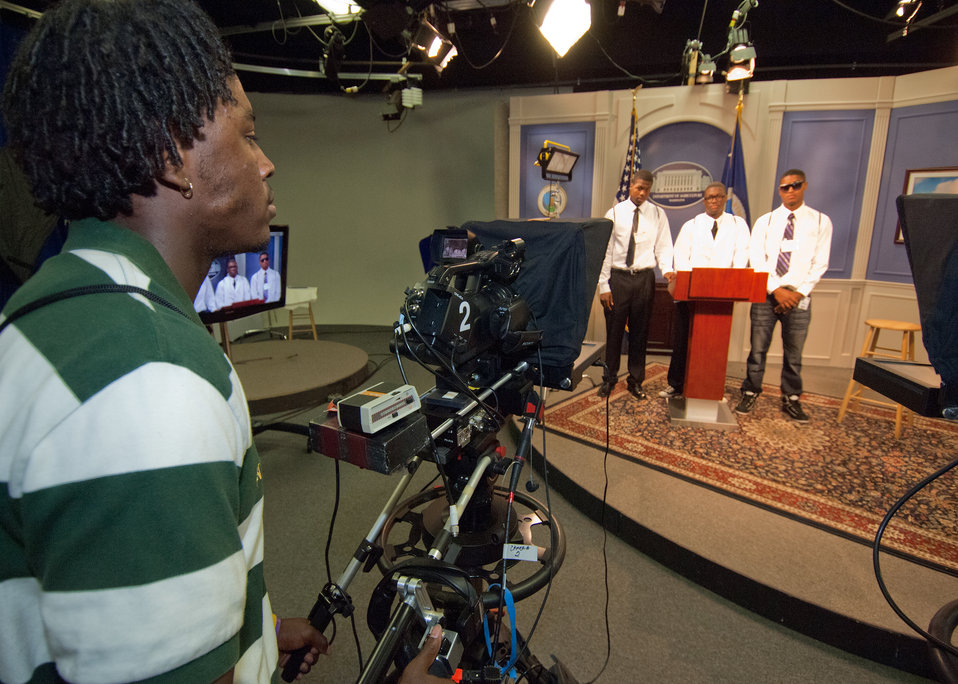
While on a Career Opportunity, seniors from Calvert High School Calvert, Texas tour the television studio United States Department of Agriculture (USDA) as part of a senior trip sponsored by the Farm Service Agency “Ag in the Classroom” program Monday, May 23, 2011, in Washington, DC. Seniors from Calvert High School Calvert, Texas (L to R) Jamarion Ramirez, Ja’Marcus Ashley, Blair Burns, stand in place for the President, Vice President and Head of Security in a reenactment of a television broadcast. Calvert High School Calvert, Texas, Senior Andre Ross acts as cameraman.